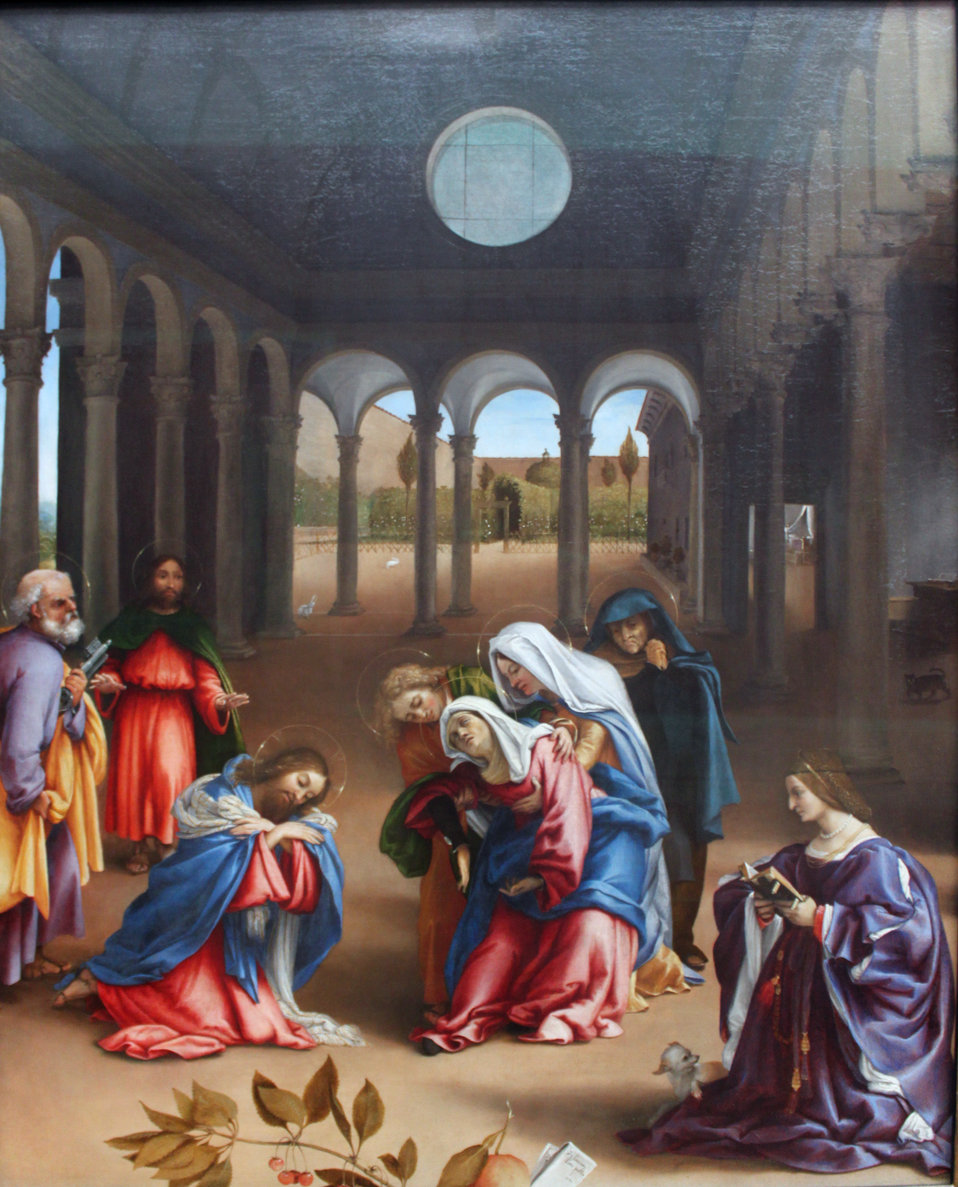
1521 Lorenzo Lotto Christs farewell to his mother anagoria